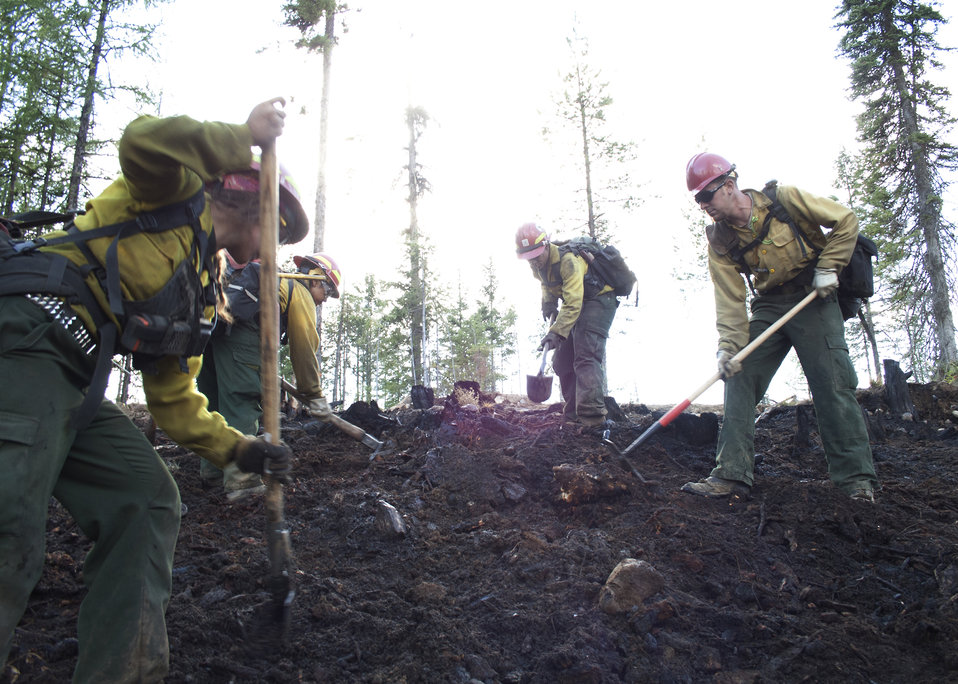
Firefighters supported by three fire engines, two helicopters, two water tenders, a dozer and an air tanker battled to contain the 90 acre Rogers Fire located on Mt. Rogers five miles west of Aladdin, WA on the Colville National Forest. Firefighters worked under adverse conditions with steep terrain and gusting winds to reduce the loss of timber and protect the Rogers Mountain Trail. The Rogers Fire began on Aug. 9, 2011 and was controlled by Aug. 19, 2011 with mop up crews ensuring that no flare-ups occurred. Colville National Forest has 1.1 million acres in northeastern Washington and includes the Kettle River, Selkirk Mountain ranges, and the upper reaches of the Columbia River.